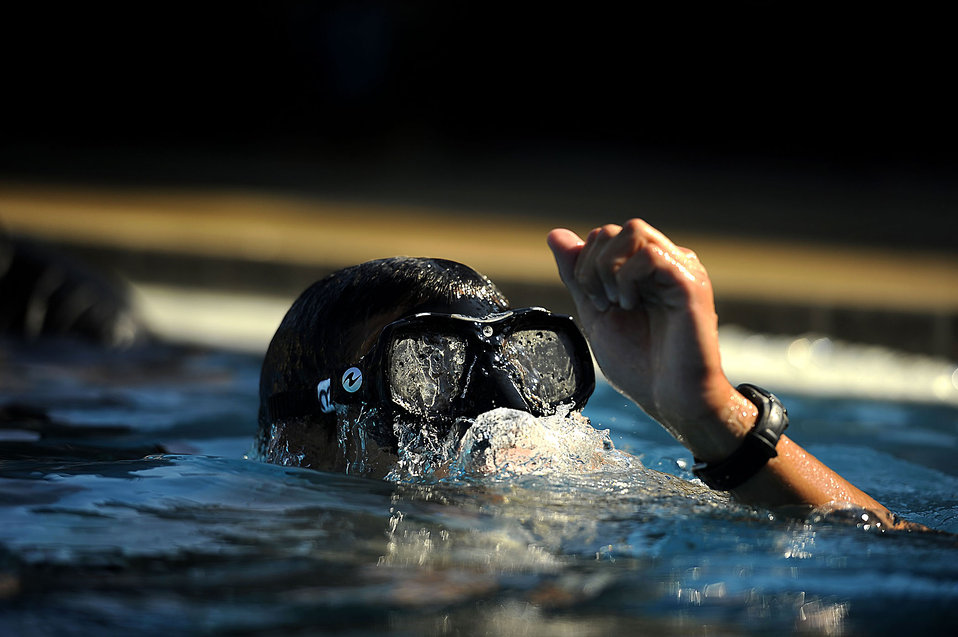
I'm breathing

A U.S. Air Force member with the Air Force Special Operations Command's Special Tactics Training Squadron at Hurlburt Field, Fla., comes up for air while participating in pre-scuba training.